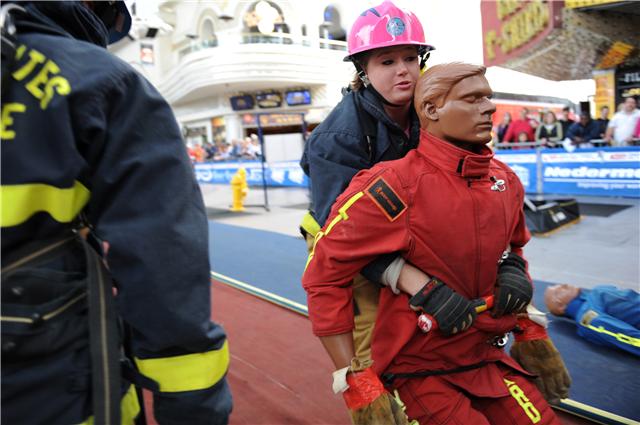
Firefighters meet the challange

Airman 1st Class Jessica Morehouse pulls a 175 pound dummy as she competes in the team relay event Nov. 18, 2009 at the Scott Firefighter Combat Challenge in Las Vegas. Airman Morehouse is assigned to the Air Force Academy, Colorado Springs, Colo.